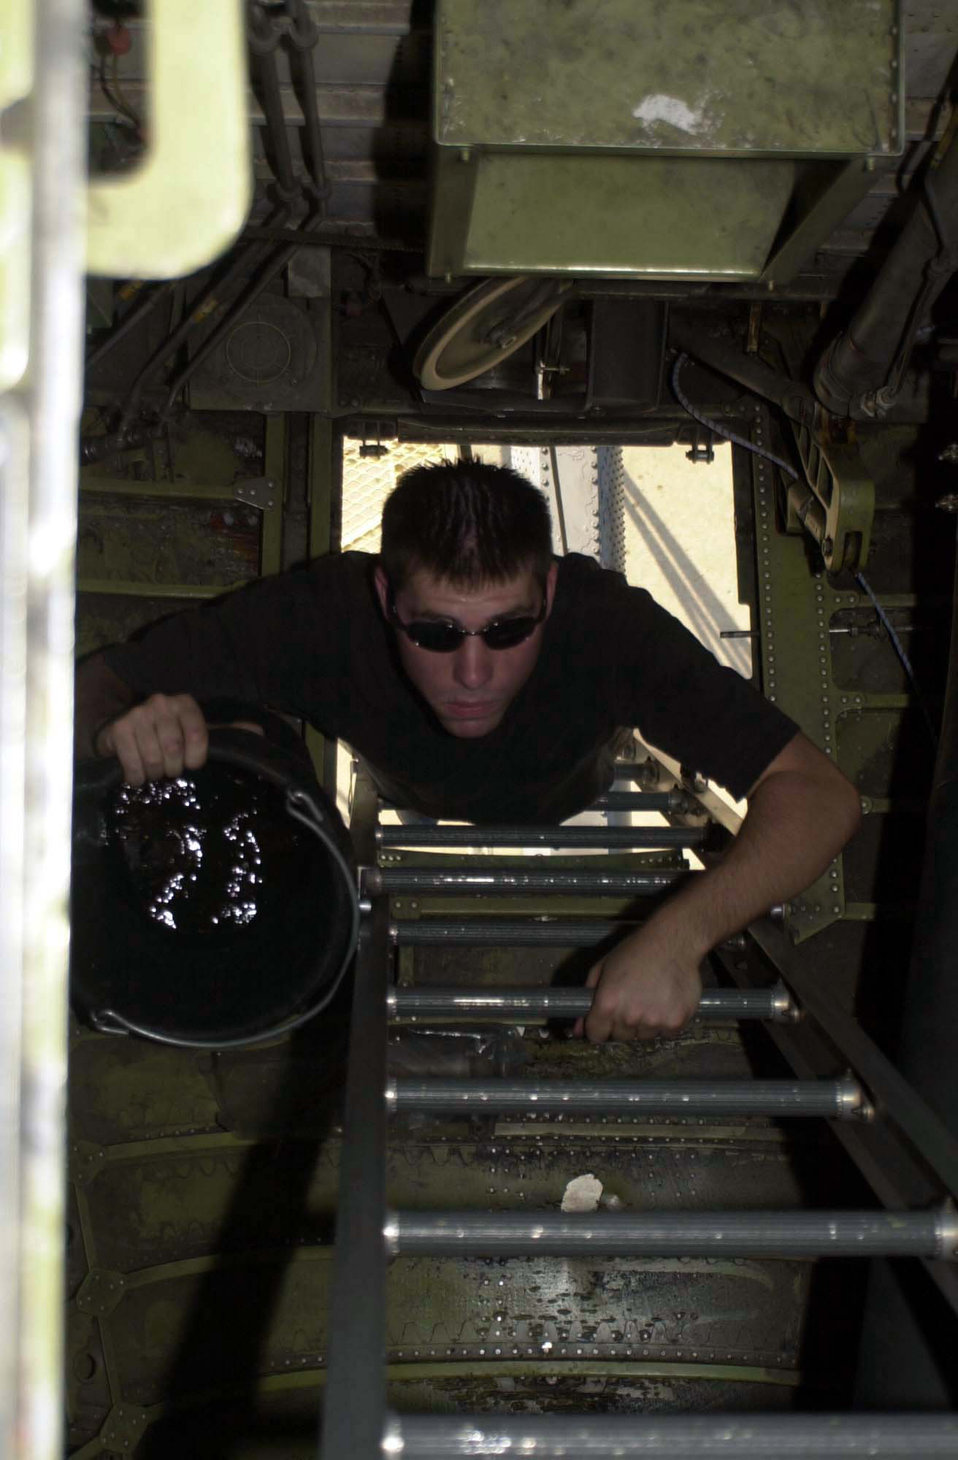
OEF crewchief

NAVAL AIR STATION SIGONELLA, Italy -- Airman 1st Class Laddy Cone, a crewchief from the 605th Aircraft Generation Squadron at McGuire Air Force Base, N.J., removes excess fluids from the engine after changing out engine parts on a KC-10A Extender. The aircraft will be used to carry troops and cargo to forward locations in support of Operation Enduring Freedom. A KC-10 can transport up to 75 people and nearly 170,000 pounds of cargo.